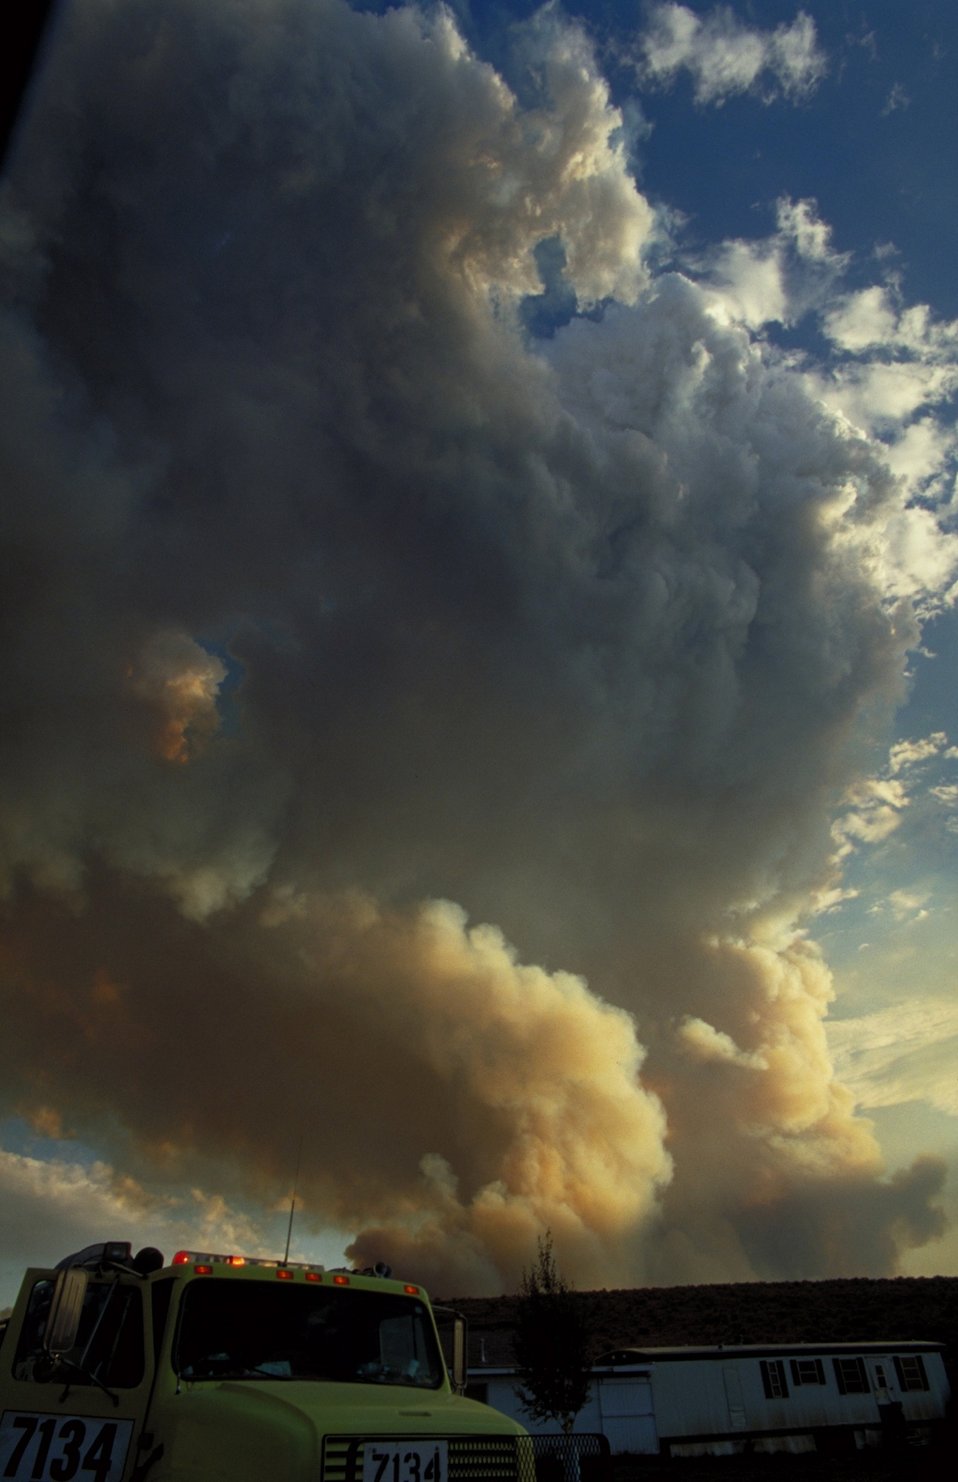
Smokey skies Heavy engine Fire Season 2000 Lower Snake River District LSRD